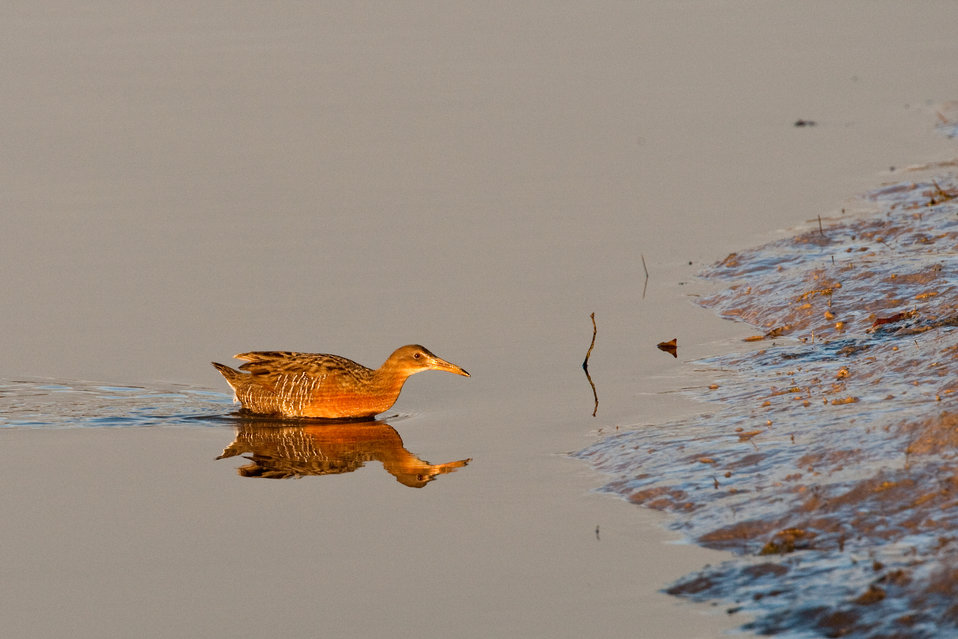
Calm waters welcome the Light-footed clapper rail (adult)